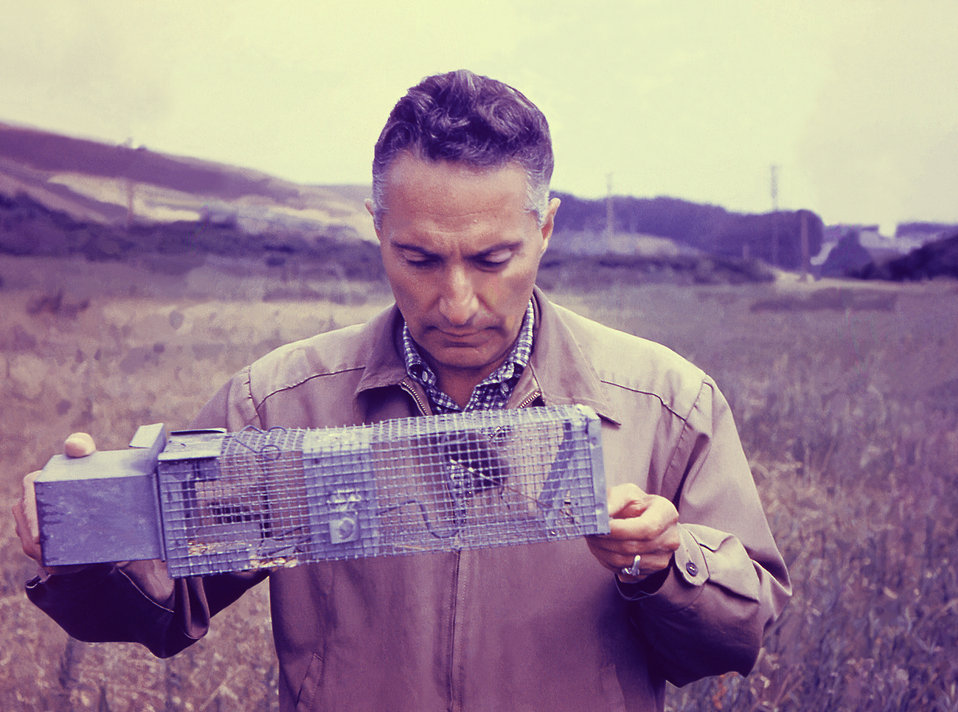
This historic 1956 image depicted Leo Kartman, ScD, public health scientist, collecting field data during a plague epidemiologic investigation in an unknown location. In this particular view, Dr. Kartman had captured a wild rodent using an animal trap from the Young Animal Trap Co. This animal would be analyzed in order to determine if it was hosting any plague-infected fleas.